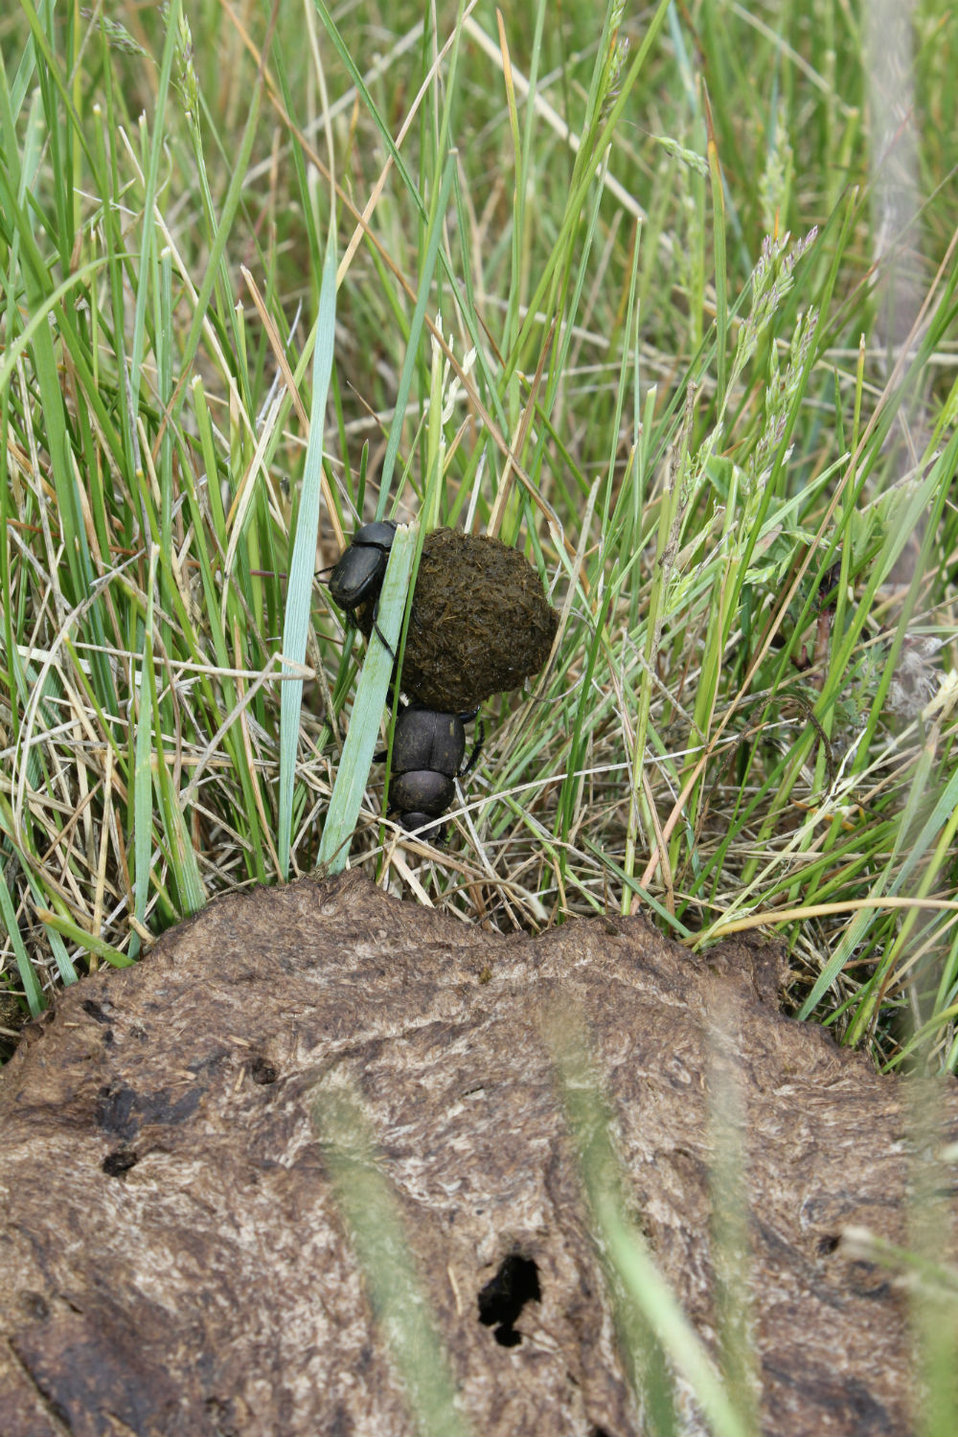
Dung Beetles on War Horse NWR

One of the best recyclers on earth is a dung beetle. Dung beetles recycle animal dung such as cow manure by burying it. Buried dung helps loosen and nourish the soil. Here are pictures of “rolling” type dung beetles from War Horse National Wildlife Refuge in central Montana.

Credit: Beverly Skinner/USFWS

Photo Contest Entry #178